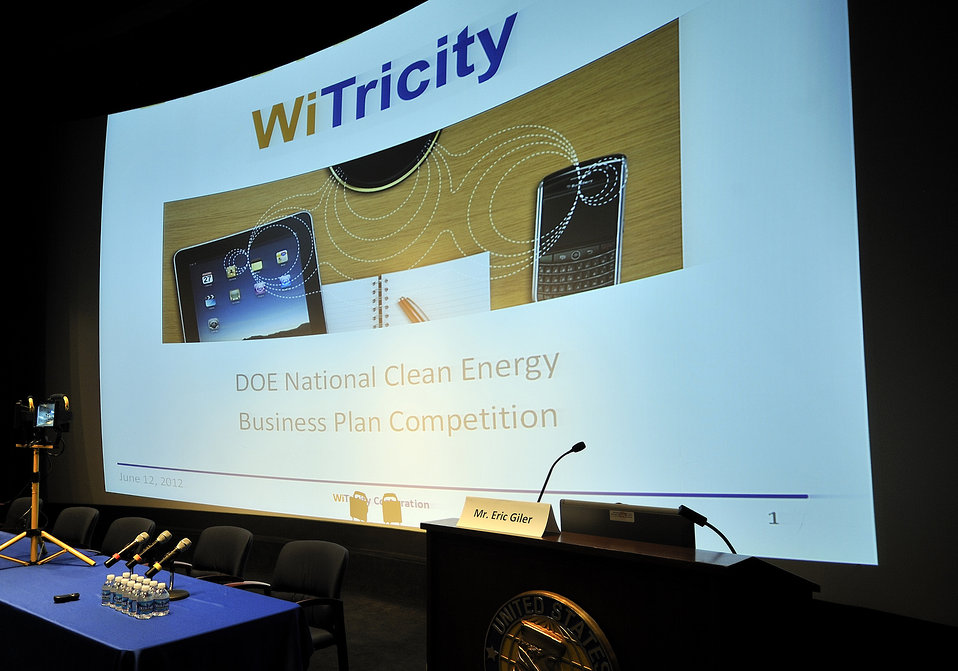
National Clean Energy Business Plan Competition

The National Clean Energy Business Plan Competition inspired nearly 300 university teams across the country to create new businesses to commercialize promising energy technologies developed at U.S. universities and the National Laboratories.